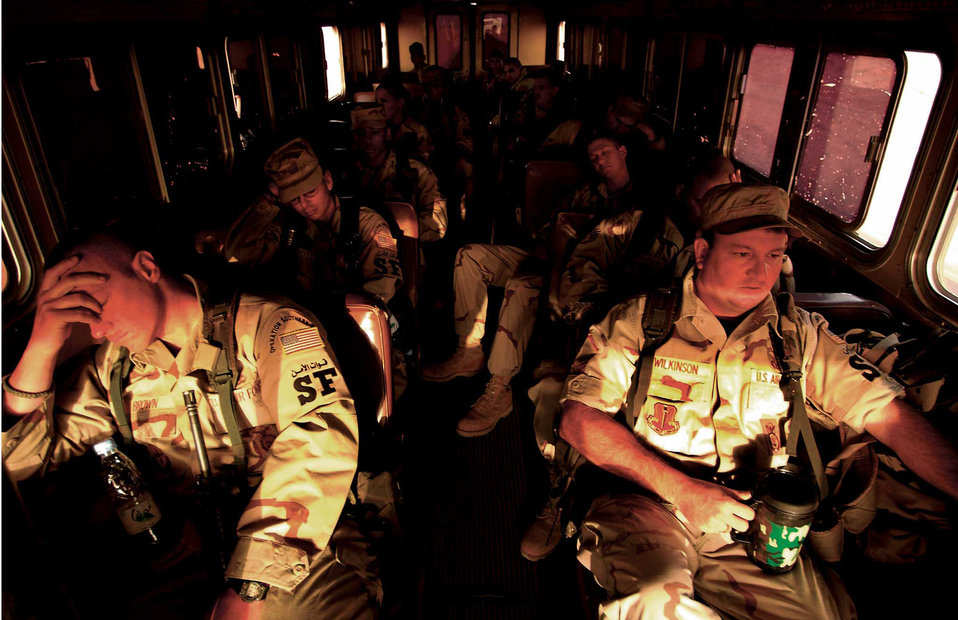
By dawn's early light

OPERATION IRAQI FREEDOM -- Longing for more rest and sleep, deployed security forces members travel to their posts in support of operations in Southwest Asia.